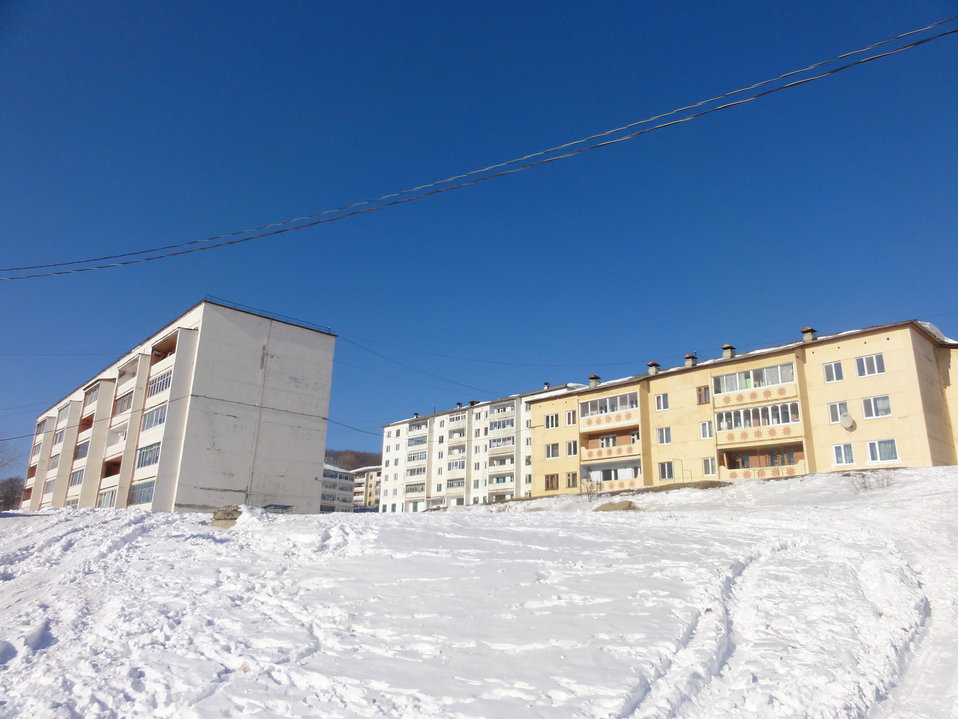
Улицы Пушкинская и Некрасовская - одни из самых далёких и гористых в Дальнегорске